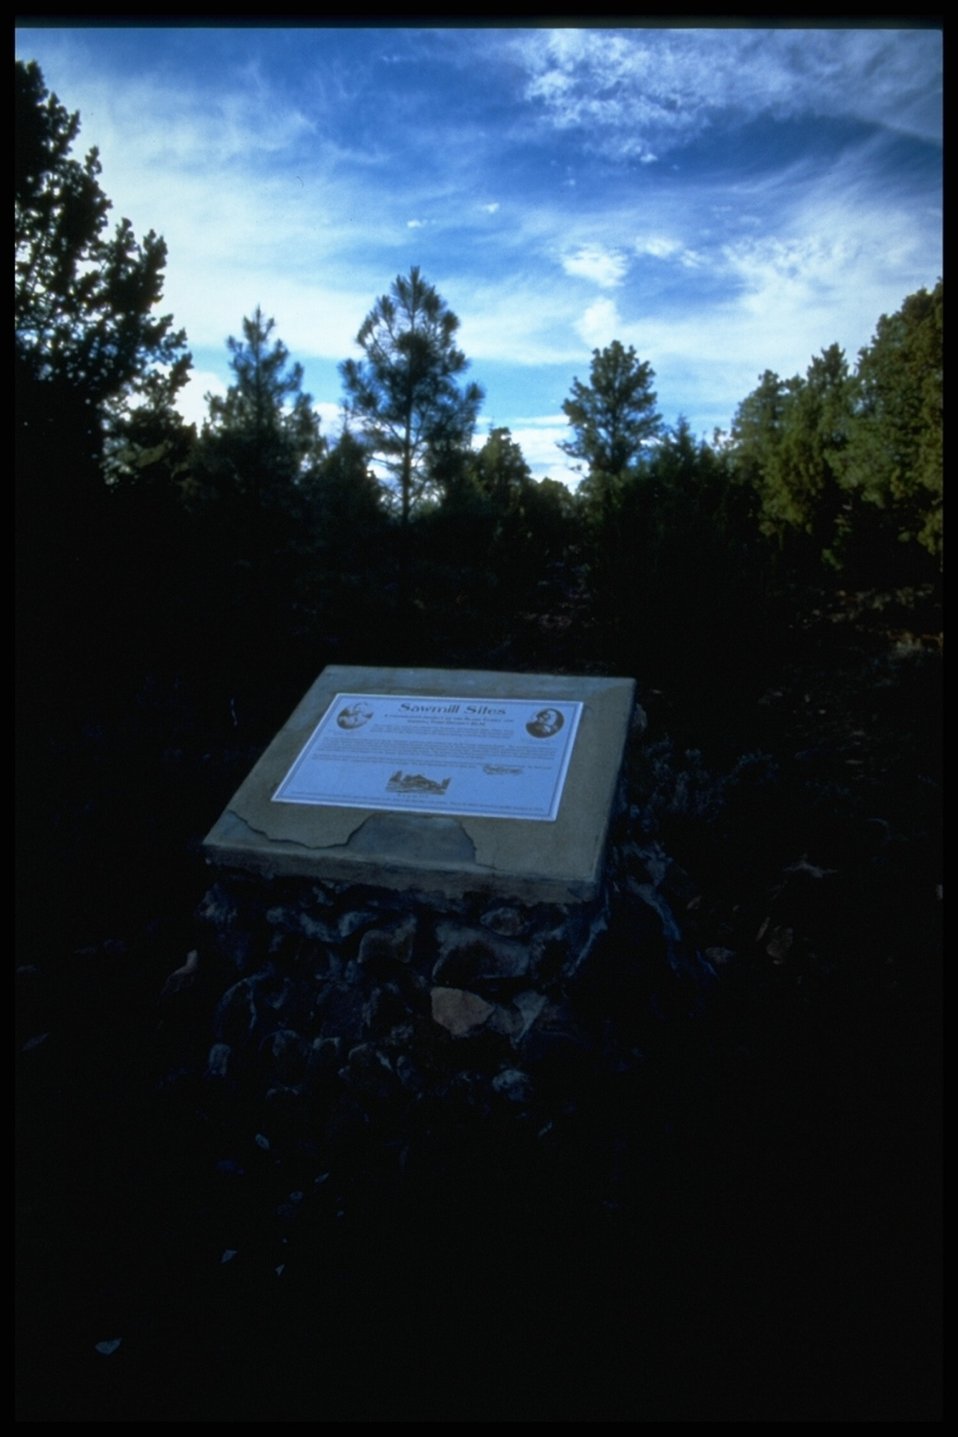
A plaque proviodes information about this area of the Grand Canyon-Parashant National Monument.